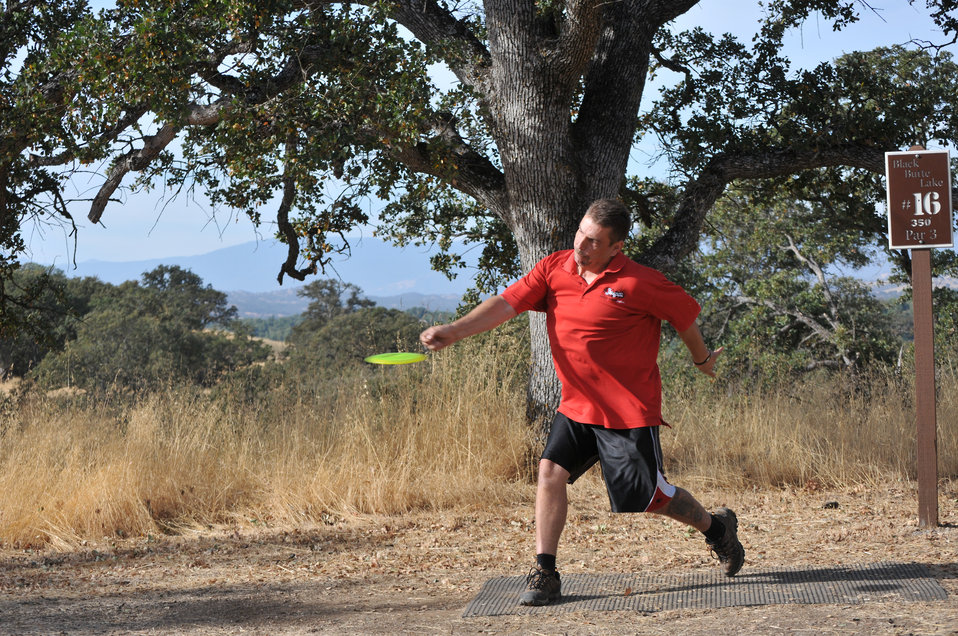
BLACK BUTTE LAKE, Calif. (Oct. 18, 2010) -- A disc golfer tees off during the Professional Disc Golf Association's Norcal Series Championships here Oct. 16. The U.S. Army Corps of Engineers Sacramento District’s Black Butte hosted the tournament Oct. 15-17 at its new disc golf course, built on park lands by The Orland Aces disc golf club under a partnership with the Corps. More than 150 disc golfers from as far as Texas competed in the tournament.